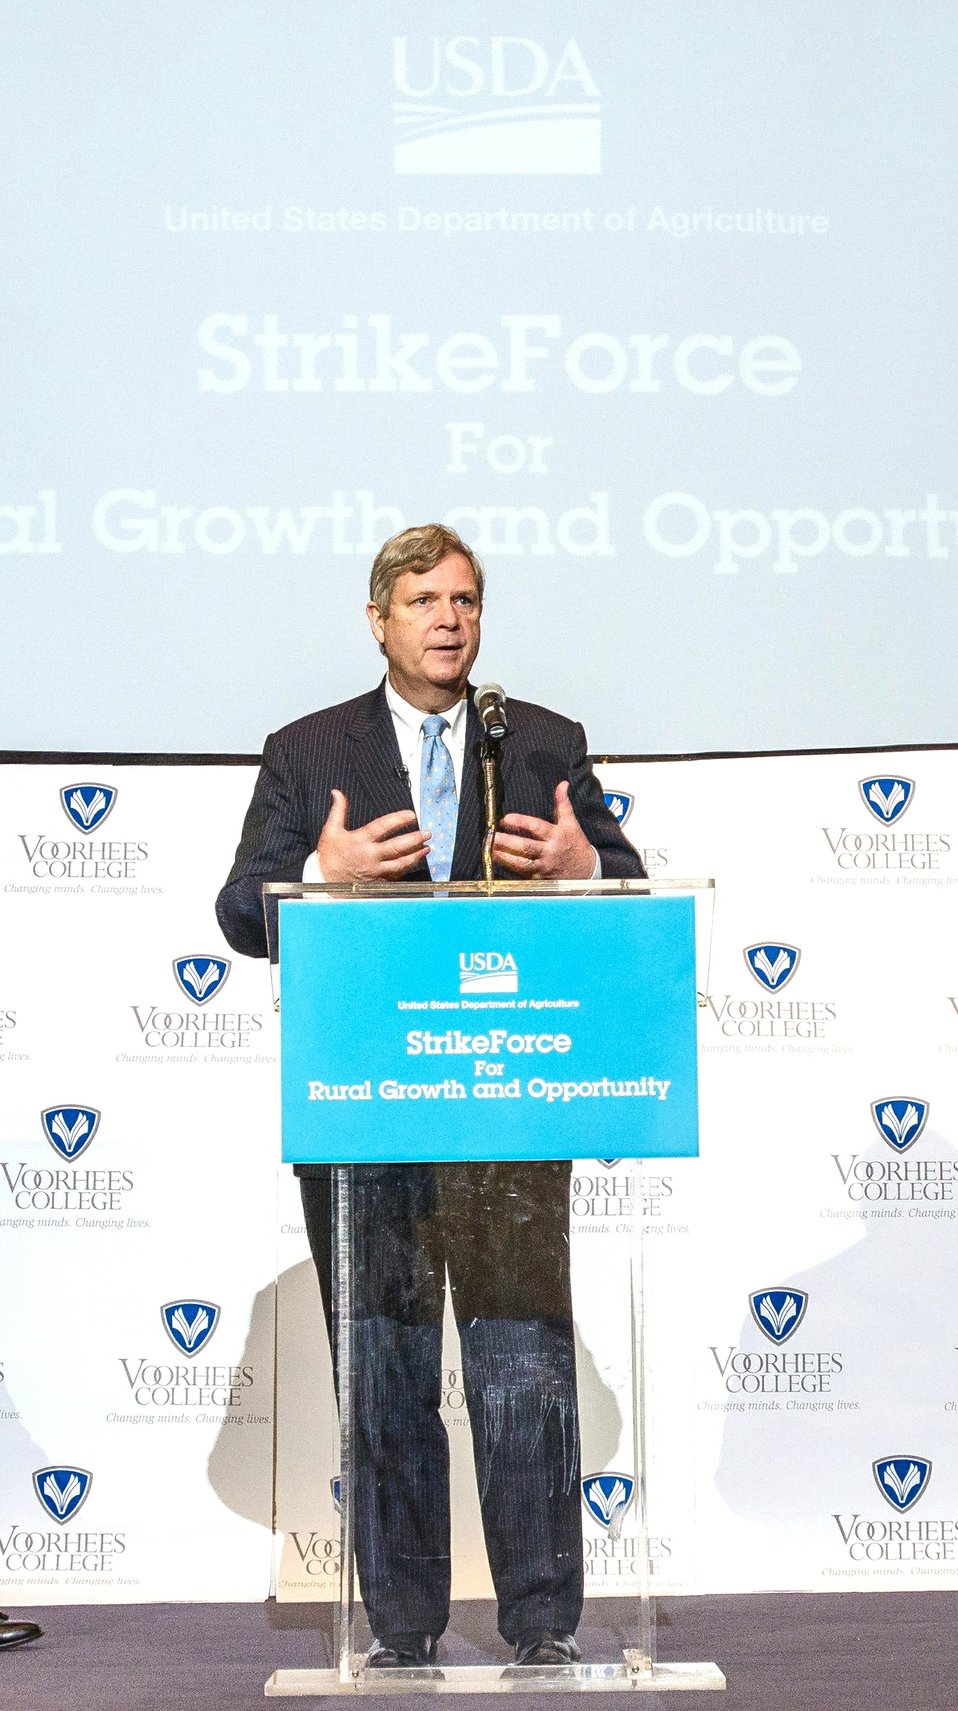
Agriculture Secretary Tom Vilsack speaks at the U.S. Department of Agriculture's (USDA) Strike Force for Rural Growth and Opportunity event held at Voorhees College in Denmark, SC, on Tuesday, March 26, 2013. The primary goal of the Strike Force initiative is to increase partnership with rural communities and leverage community resources in targeted, persistent poverty areas. Vilsack noted that through the Strike Force initiative, USDA will do more to partner with local and state governments and community organizations on projects that promote economic development and job creation.